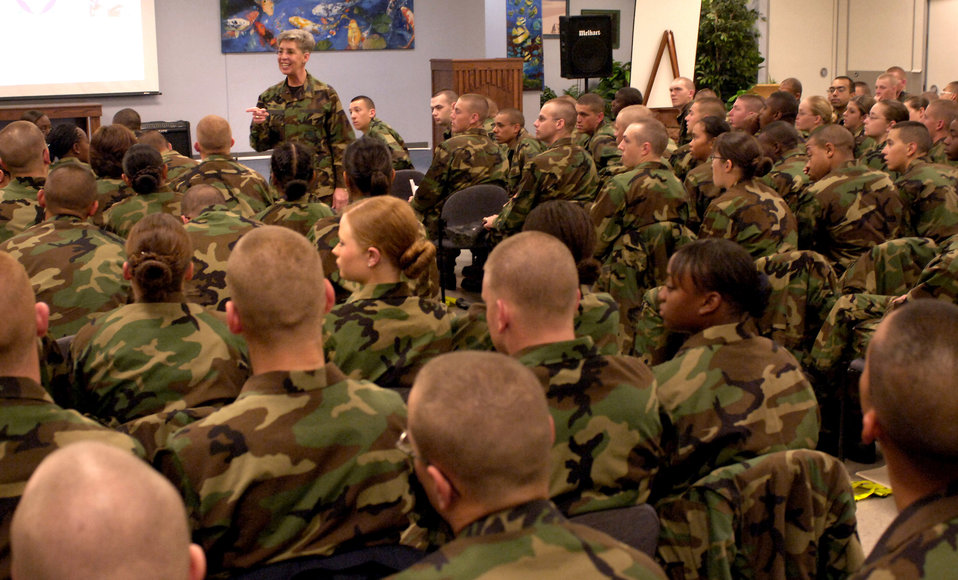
School's in session

KEESLER AIR FORCE BASE, Miss. (AFPN) -- Col. Deborah Van De Ven talks with Airmen entering training at the 81st Training Group during the newcomer's briefing Feb. 21. Technical resident courses include career fields such as personnel, information management, air traffic control, finance, manpower, communications-electronics maintenance, computer operation, maintenance and programming, weather, metrology, aircraft warning and control systems and radio operations. Colonel Van De Ven is commander of the 81st TRG.